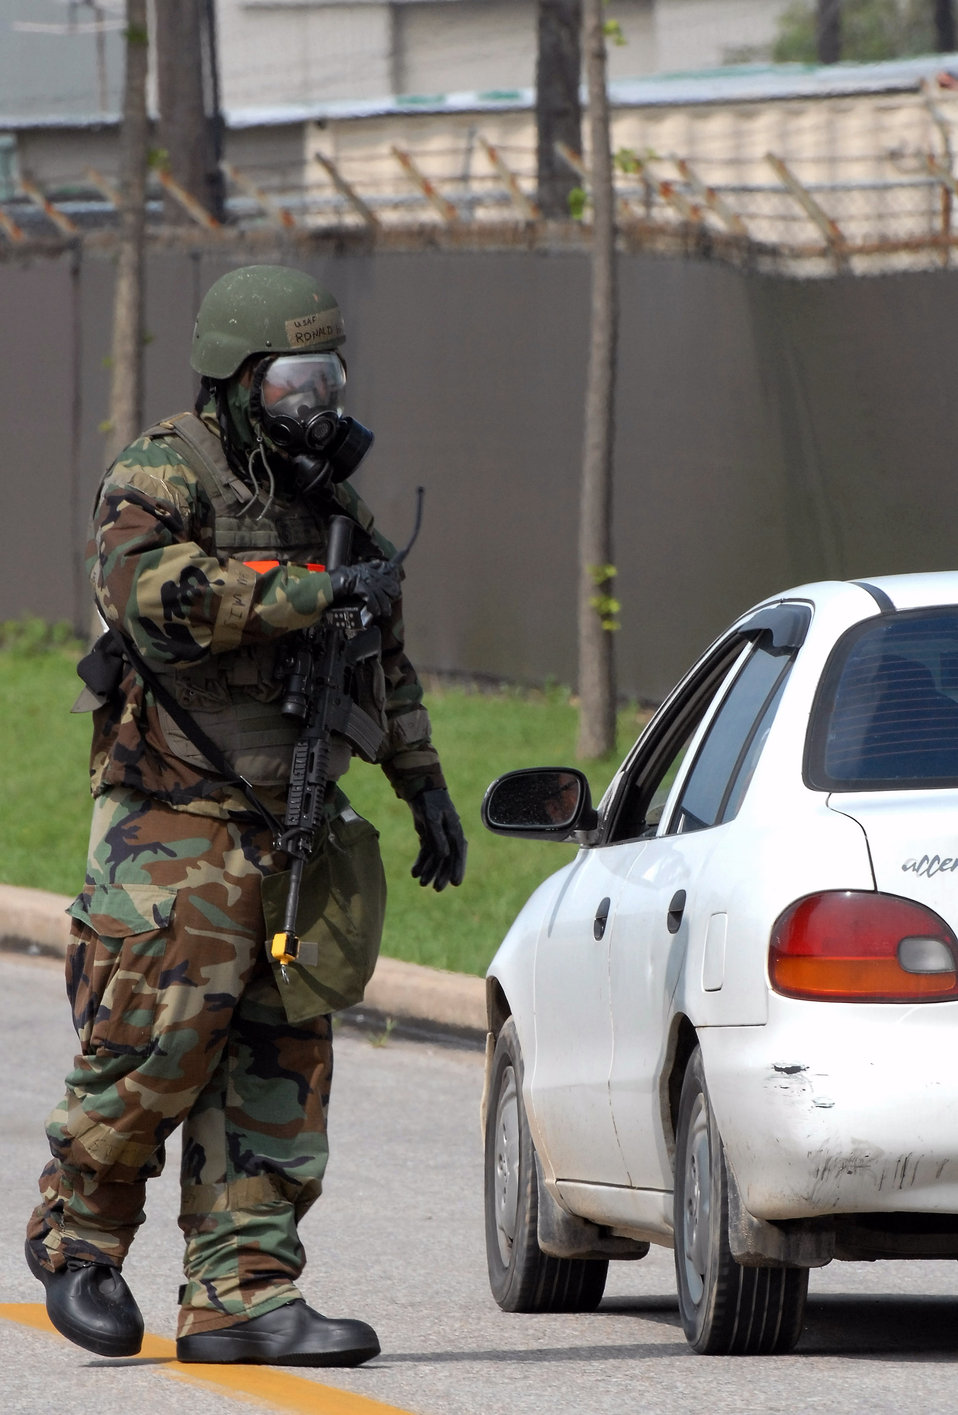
BEVERLY BULLDOG

Staff Sgt. Ronald Hale stands guard at an intersection during a bomb threat July 22 at Kunsan Air Base, South Korea. The bomb threat is a part of the peninsula wide operational readiness exercise being conducted to evaluate the wing member's readiness and ability to perform their wartime mission. Sergeant Hale is with the 8th Security Forces Squadron.